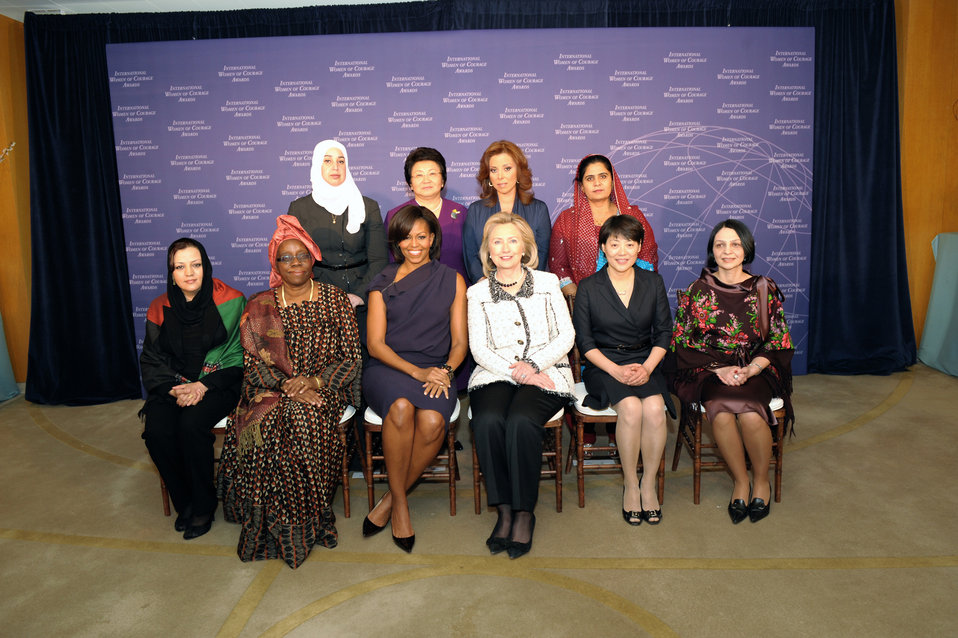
Secretary Clinton and First Lady Obama With 2011 International Women of Courage Award Honorees

U.S. Secretary of State Hillary Rodham Clinton, center right, and First Lady of the United States Michelle Obama, center left, pose for a photo with the honorees of the 2011 International Women of Courage Awards at the U.S. Department of State in Washington, D.C., on March 8, 2011.